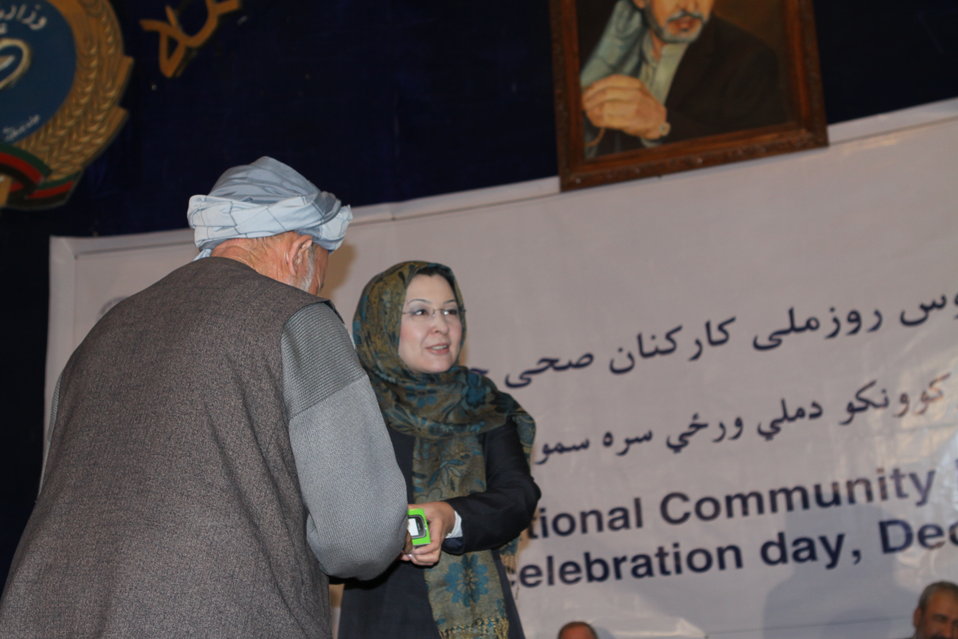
Community Health Workers Celebrated

Kabul, Afghanistan | December 5, 2010 — In support of the United Nations designated International Volunteer Day for Economic and Social Development, Afghanistan’s Ministry of Public Health celebrated its annual Community Health Worker Day today. Acting Minister of Public Health Dr. Suraya Dalil, USAID Senior Deputy Mission Director Robert Hellyer, other government officials, and international donors joined in recognizing the critical contribution of community health workers in Afghanistan and encouraging them to continue their voluntary support to their communities.
The event praised the contributions of the more than 22,000 volunteers throughout the country who deliver community level health-education, counseling, and services out of village health posts located in private homes. The Ministry of Public Health envisioned that community-based healthcare programs will actively encourage communities and families to adopt healthy lifestyles and behaviors, and provide families access to high quality and socially acceptable preventative medicine and life-saving services.
“We have 22,000 community health workers in Afghanistan that are able to implement the basic and standard medicines. They all have been trained through a job description,” said Minister Dalil. Addressing the health workers, she added, “I am proud and feel powerful that I have people like you.”
USAID-funded health projects collaborate closely with the Ministry of Public Health to improve the health and nutritional status of Afghans, provide quality primary healthcare, and promote healthy behaviors at the community and household-levels. USAID supported the training of more than 9,000 of the volunteer community health workers currently working in Afghanistan.
“On behalf of the American people, I congratulate the Community Health Workers for their diligence to gain the skills and knowledge necessary to serve their communities in this important role,” said USAID Senior Deputy Mission Director Hellyer. “USAID strongly supports community based health care and believes that quality community-based health services are essential to reaching Afghanistan’s Millennium Development Goals.”
To support the Basic Package of Health Services, USAID assisted in developing the community health worker training manual, helped train community health worker supervisors and master-trainers, facilitated in-service training, and produced and developed reporting tools, job aids, and education materials.